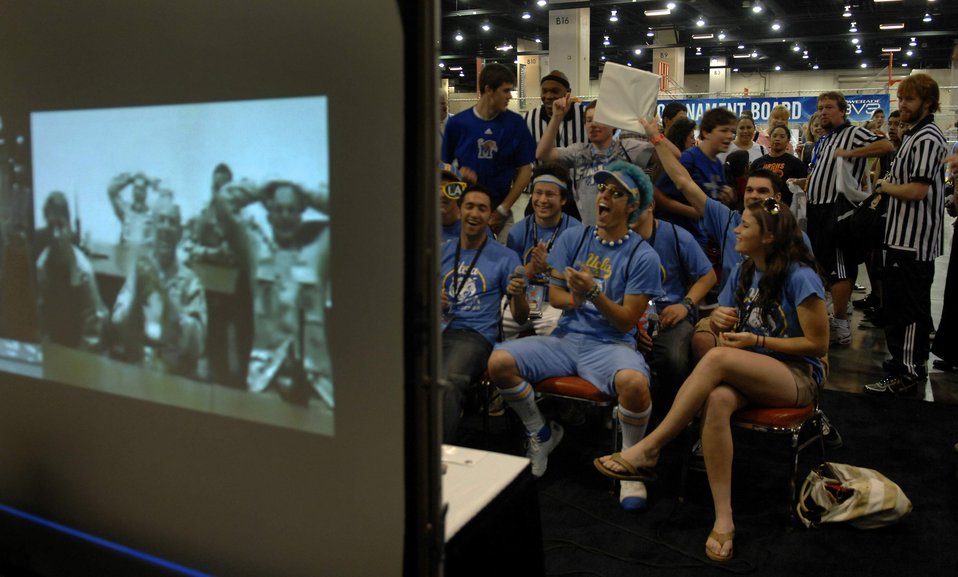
NCAA Final Four recognizes American servicemembers

Fans of the UCLA and Memphis basketball teams use a